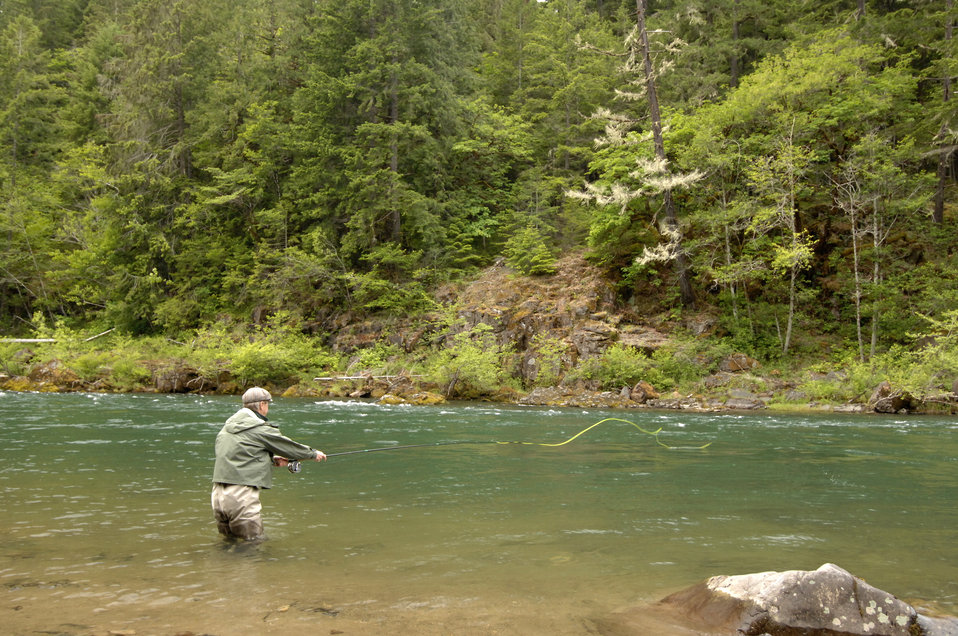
Fly-fishing is one of the various recreational activities at Diamond Lake in Umpqua National Forest in Oregon on June 10, 2008.